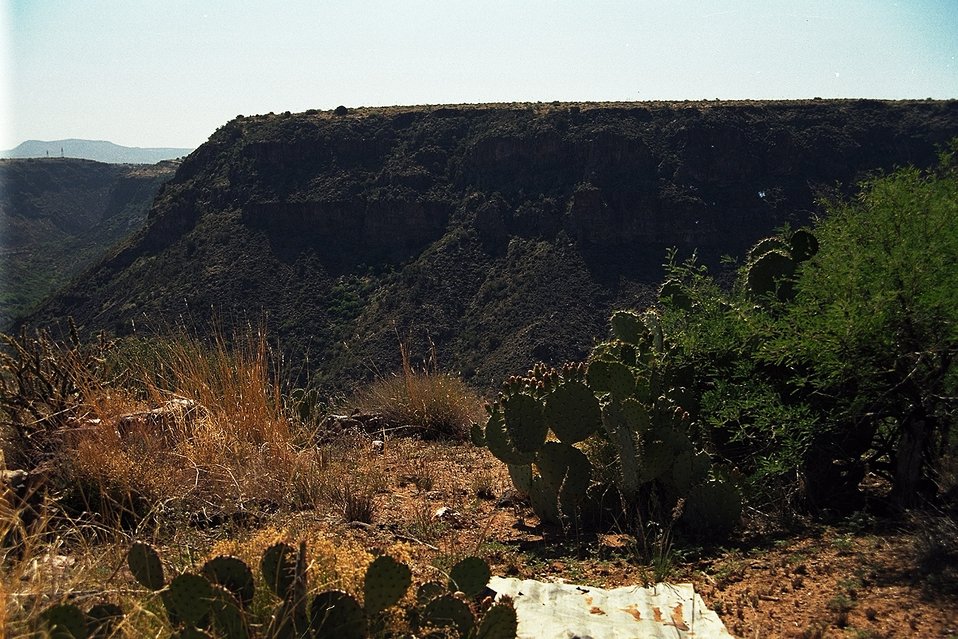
Pricly pear Cactus by the Richinbar mine area in the Agua Fria National Monument.